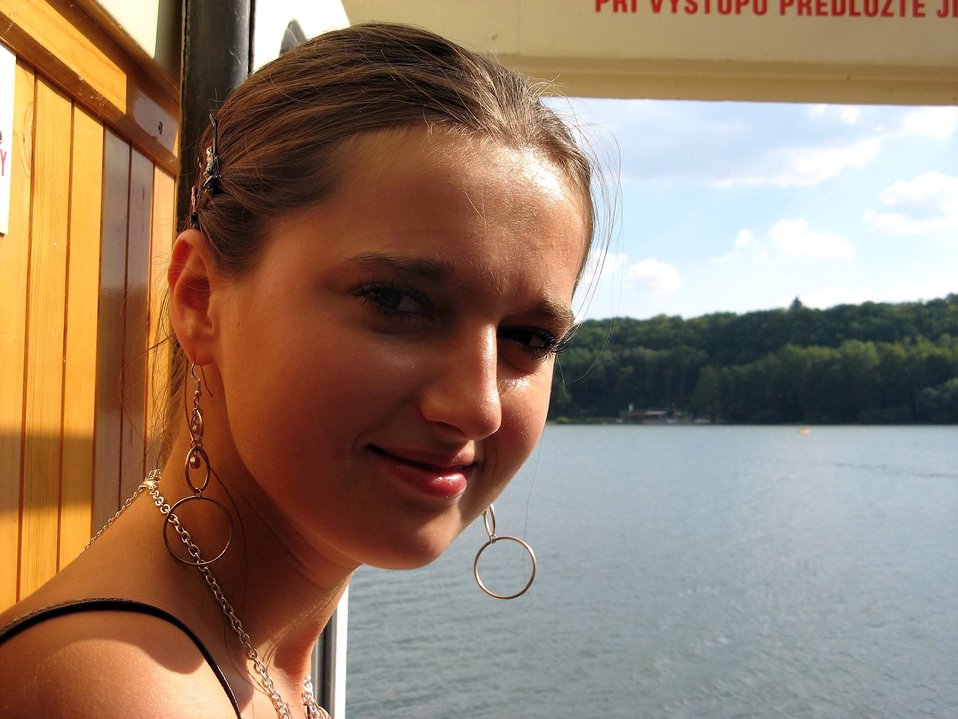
English:
Image title: Pretty girl on ship Image from Public domain images website, http://www.public-domain-image.com/full-image/people-public-domain-images-pictures/female-women-public-domain-images-pictures/pretty-girl-on-ship.jpg.html